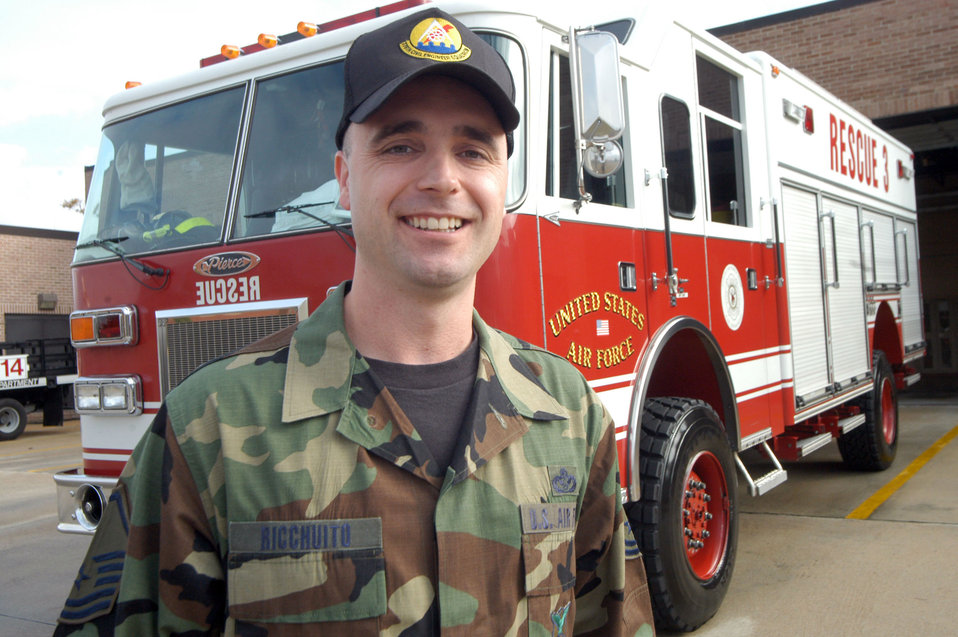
Robins Airman selected as top firefighter of the year

Master Sgt. Shawn Ricchuito has been selected as the Air Force Military Fire Officer of the Year for 2006. He will now compete at the Department of Defense level. Sergeant Ricchuito is a firefighter with the 778th Civil Engineer Squadron at Robins Air Force Base, Ga.